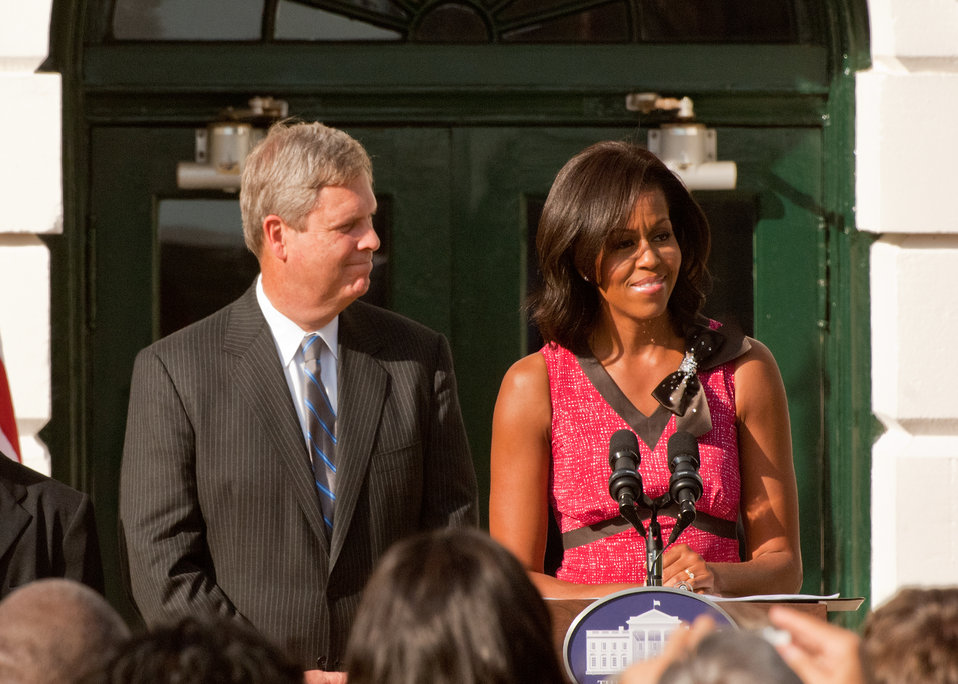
Agriculture Secretary Tom Vilsack and First Lady Michelle Obama hosted a reception on the South Lawn of the White House in Washington, DC, on Monday, October 17, 2011 to honor the over 1200 winners in the HealthierUS Schools Challenge that met the First Lady’s goal to double the number of participants in the HealthierUS School Challenge in a year. In February 2010, First Lady Michelle Obama introduced “Let’s Move” incorporating the HealthierUS School Challenge into her campaign to promote a healthier generation of children. The HealthierUS School Challenge recognizes elementary, middle and high schools nationwide that create healthier school environments by providing exceptional nutrition education, nutritious food and beverage choices, physical education and opportunities for physical activity. As of September 28, 2011, there are 1631 schools certified. A tool kit on how to become a Healthier U.S. School can be found at www.fns.usda.gov.